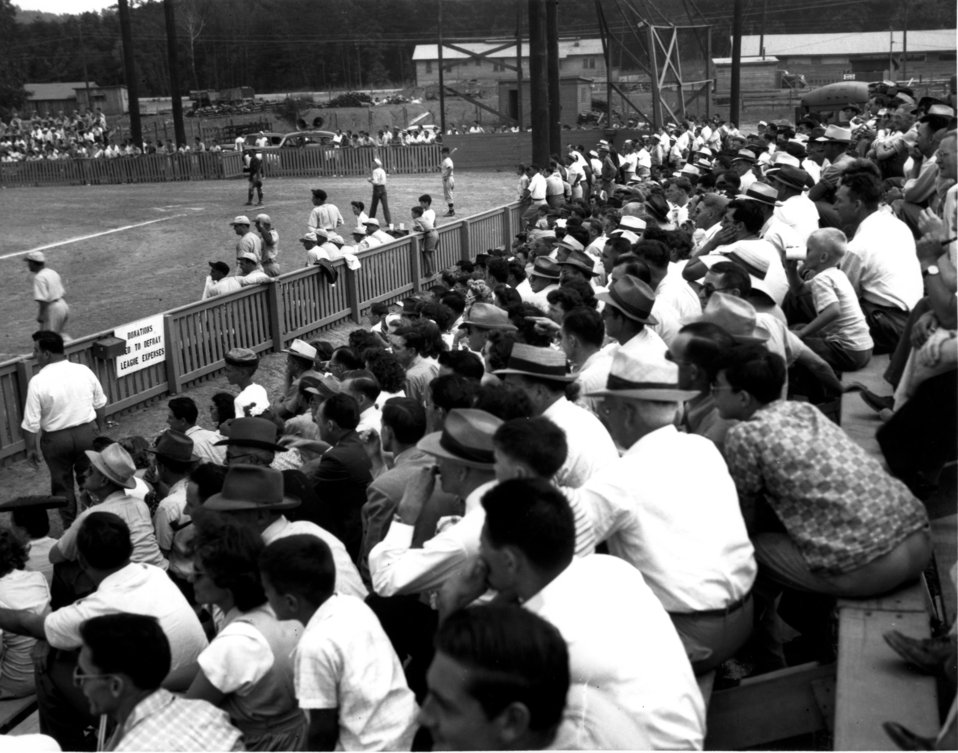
Recreation at Oak Ridge